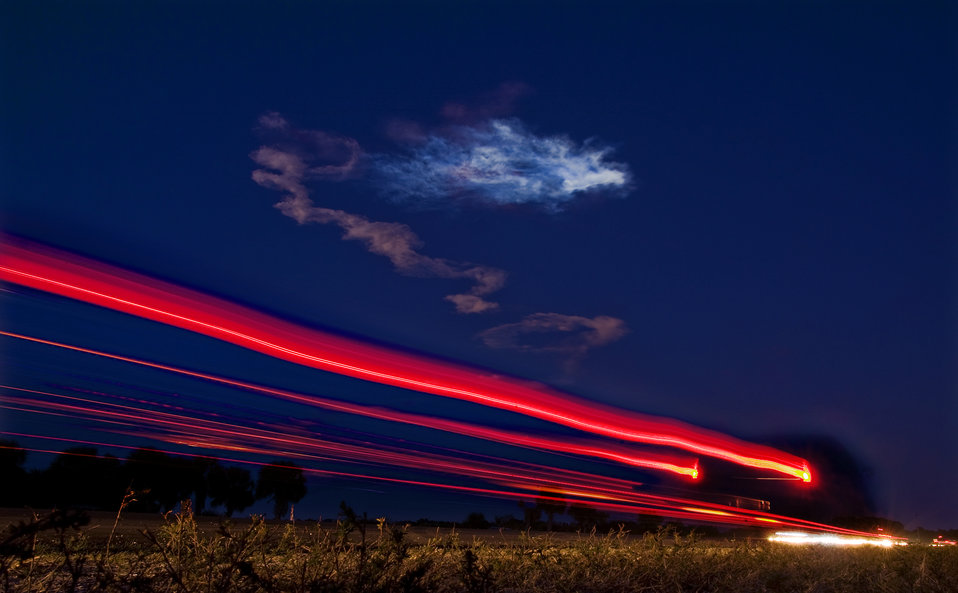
Shuttle STS-119

Traffic comes to a halt to watch space shuttle Mission STS-119 climb into space leaving contrails glowing in the night sky, March 16, Cape Canaveral, Fla.